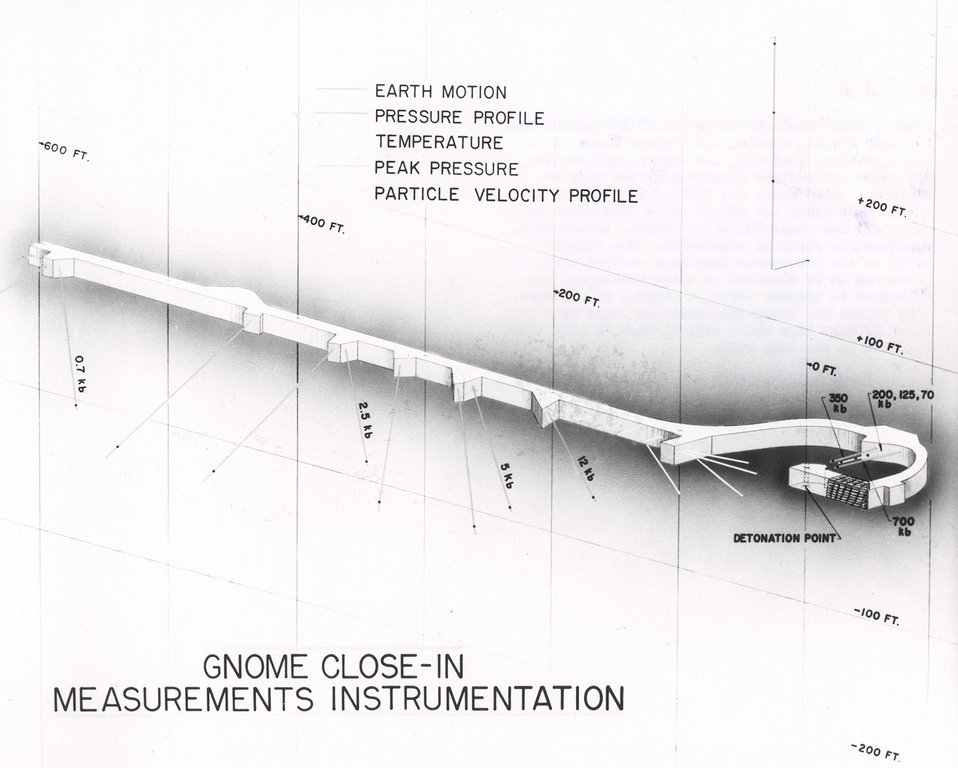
Line drawing showing the Project Gnome tunnel configuration, including the hooked, self-sealing end where the nuclear explosive device will be employed. Circa 1968.